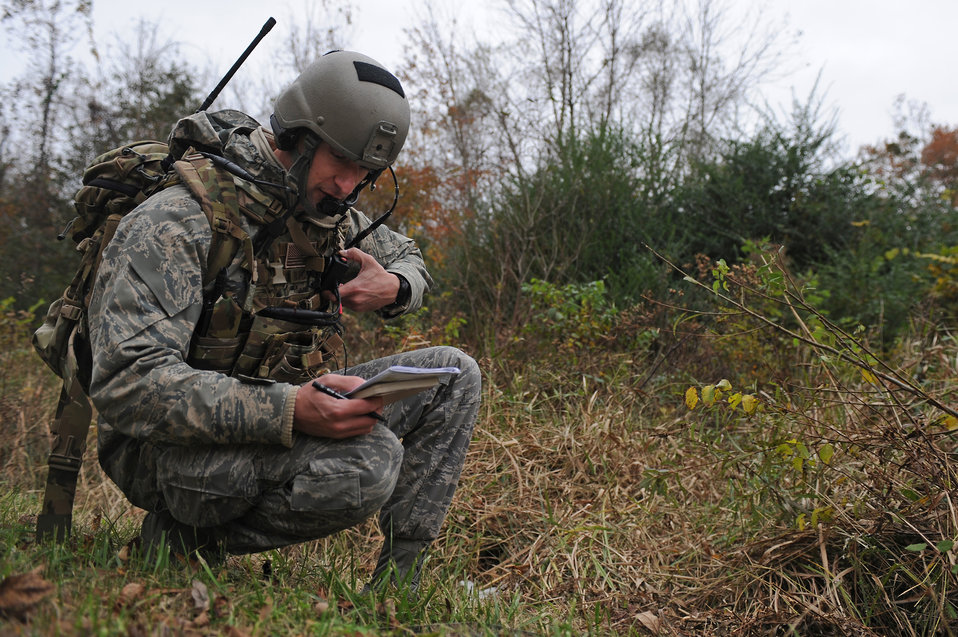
JTAC training

Airman 1st Class Kyle Gutowski reads coordinates to aircrew during a field training exercise at Creswell, N.C., Nov. 15, 2012. JTACs support ground forces in numerous overseas locations. Gutowski is joint terminal attack controller trainee with the 682nd Air Support Operations Squadron at Pope Army Air Field, N.C.